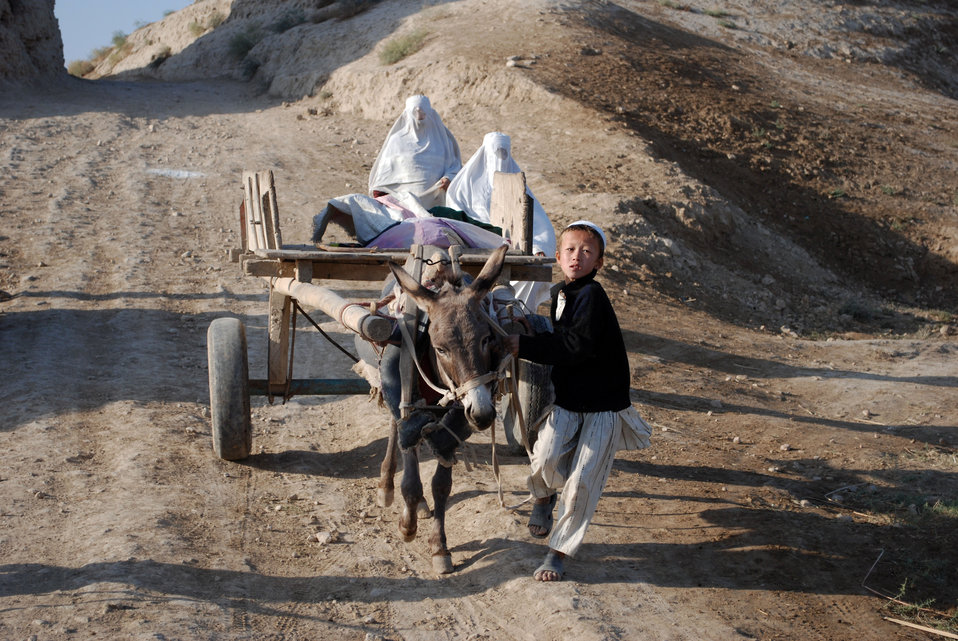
'On the Road' in Balkh Province